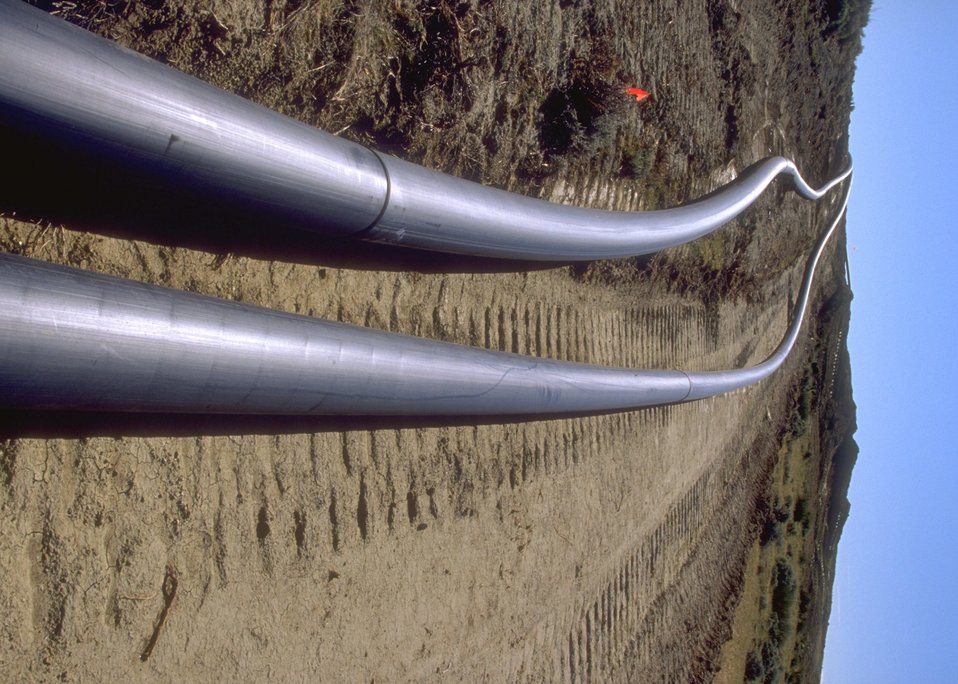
Construction for coal bed methane development, Buffalo Field Office.